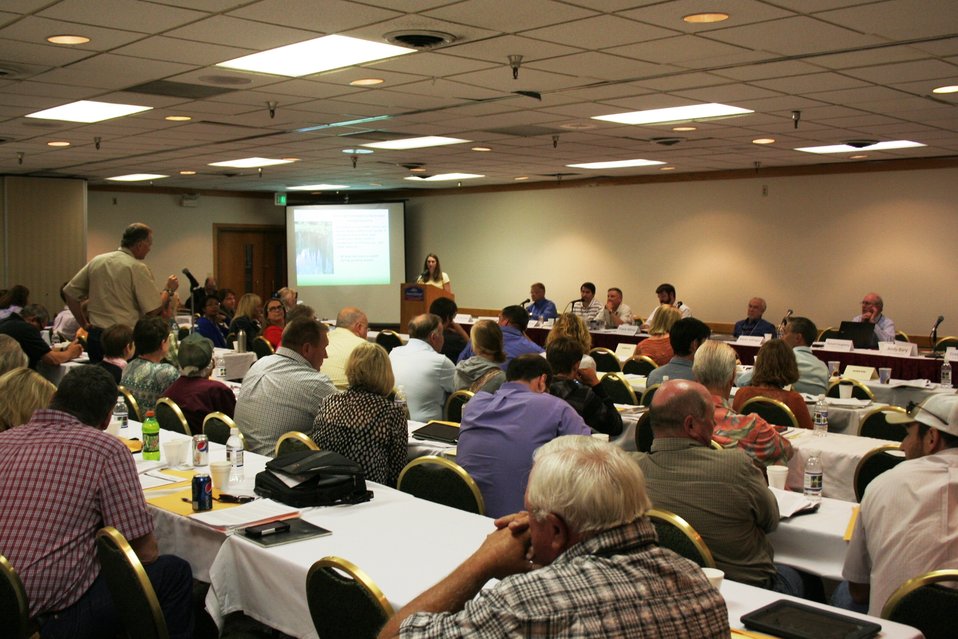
On the Road with Mike Taylor

FDA Deputy Commissioner Michael Taylor (left) and colleagues started a five-day tour of the Pacific Northwest on Sunday, Aug. 11, 2013 -- visiting Idaho, Oregon and Washington -- to get a first-hand look at produce production and irrigation operations, and to discuss the proposed Produce Safety Rule with growers, food industry representatives and state officials.

Karen Killenger, an associate professor at Washington State University and the University of Idaho, speaks to growers, representatives of the food industry and others at a listening session to discuss proposed produce safety regulations. Seated on the panel are from left: MikeTaylor, Samir Assar, Erick Snellman and Travis Minor of FDA; Michael Morissey of Oregon State University; and Richard Dougherty of Washington State University.

For more about Mike's multi-region tour, read these FDA Voice blog posts:

• Hearing the Concerns of Maine Growers Striving for Agricultural Diversity
• On the Road with Mike Taylor: Touring the Pacific Northwest
• On the Road with Mike Taylor, Day 2: Frank Talk in Farm Country
• On the Road with Mike Taylor, Day 3: Families and Partnerships
• On the Road with Mike Taylor, Day 4: Looking to the Future